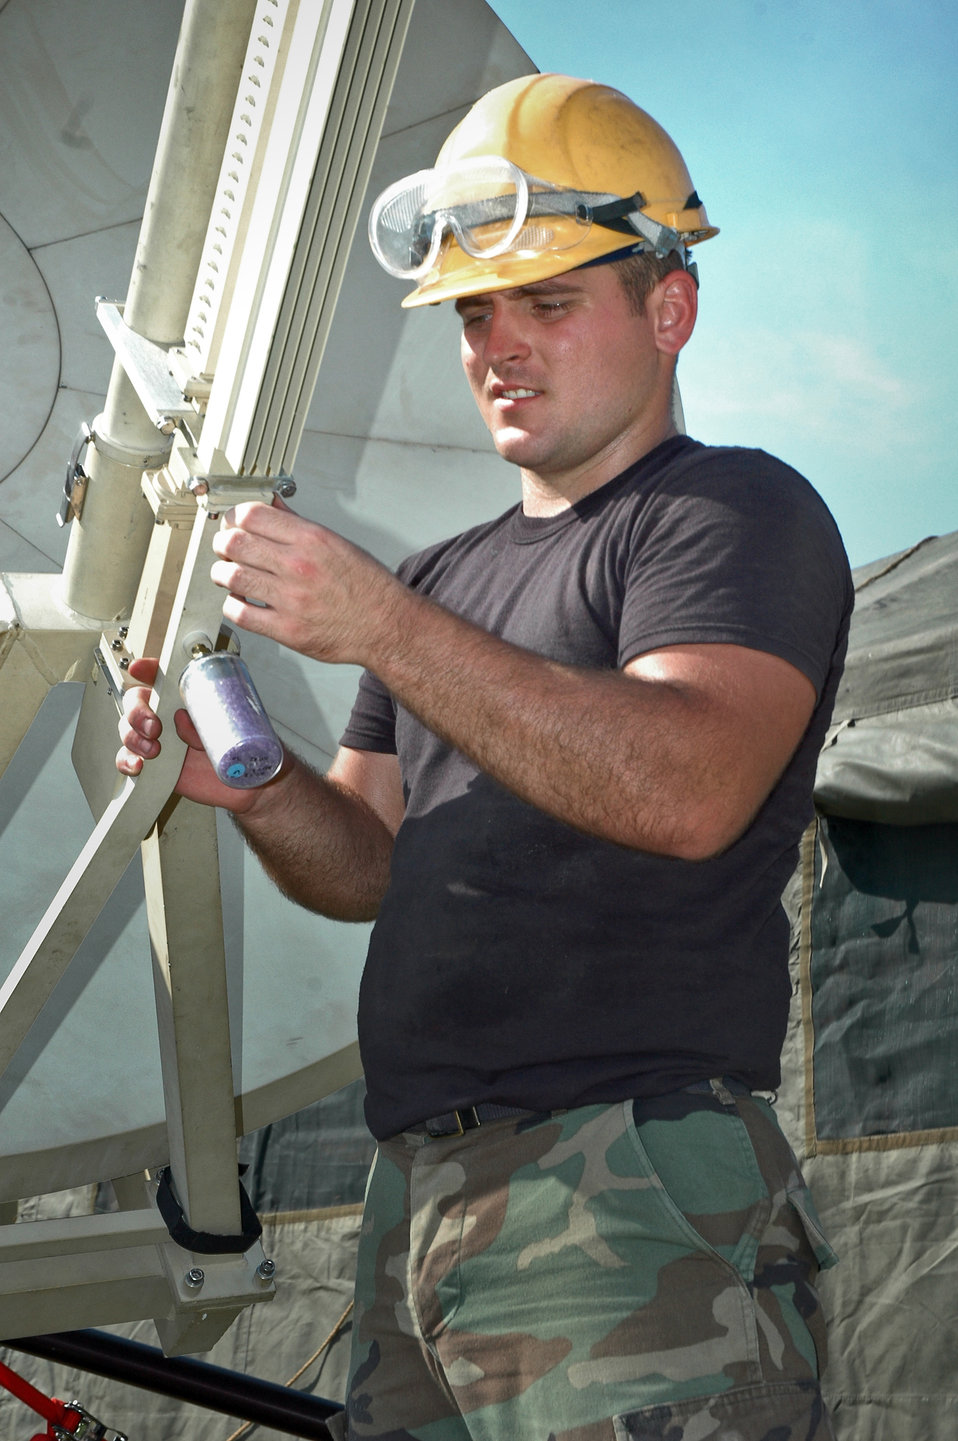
Combat communications squadron hooks up tent city

NEW ORLEANS -- Senior Airman James Torrey installs a satellite dish at the newly constructed tent city near the New Orleans airport. The dish will provide telephone and Internet capability to Airmen living in the city.